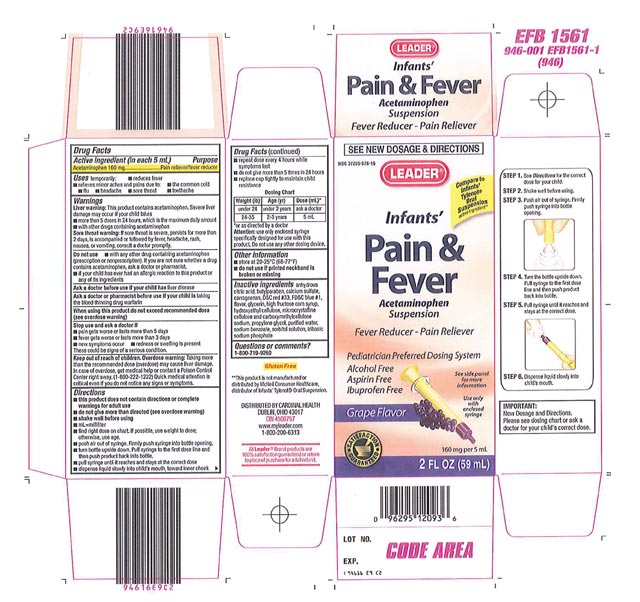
Recalled - Acetaminophen infant suspension liquid

November 1, 2013 – Product Recall – Perrigo Initiates Nationwide Voluntary Product Recall of Acetaminophen Infant Suspension Liquid, 160 Mg/5 Ml, Due to a Potential Defect with the Co-packaged Oral Syringe.